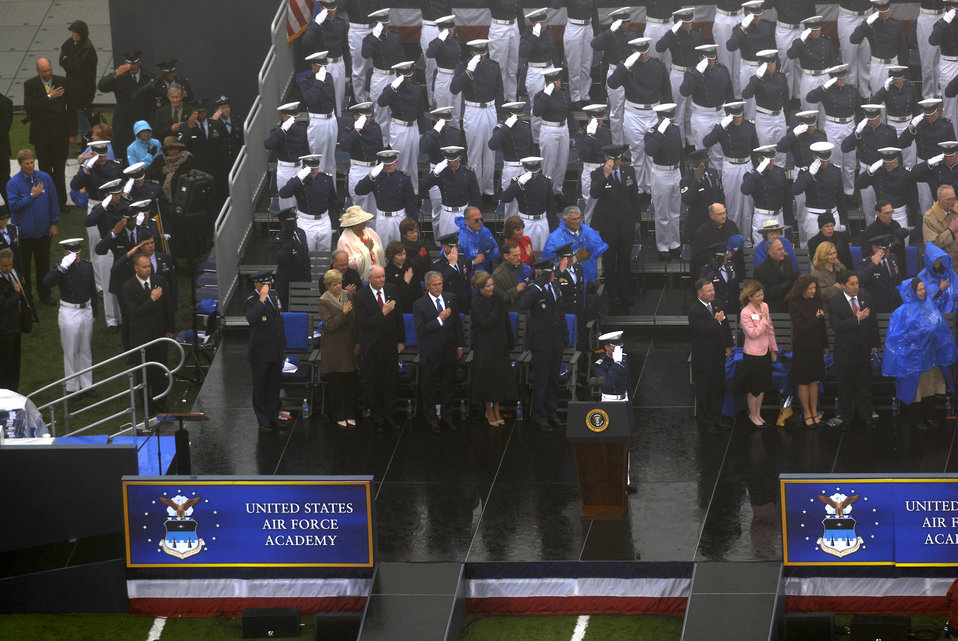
The 50th Academy class graduates

Everyone at the U.S. Air Force Academy's Falcon Stadium, including President George W. Bush, Secretary of the Air Force Michael Wynne and Air Force Chief of Staff Gen. T. Michael Moseley, pledge allegiance to the flag during the Academy Class of 2008 graduation ceremony May 28.